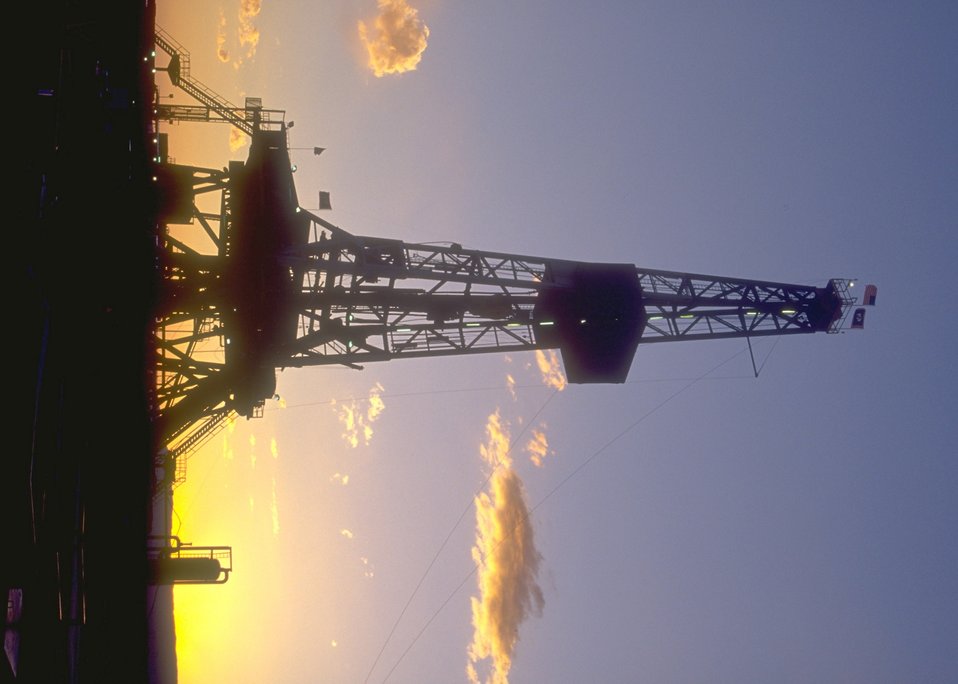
Burlington Northern deep well rig, Casper Field Office.